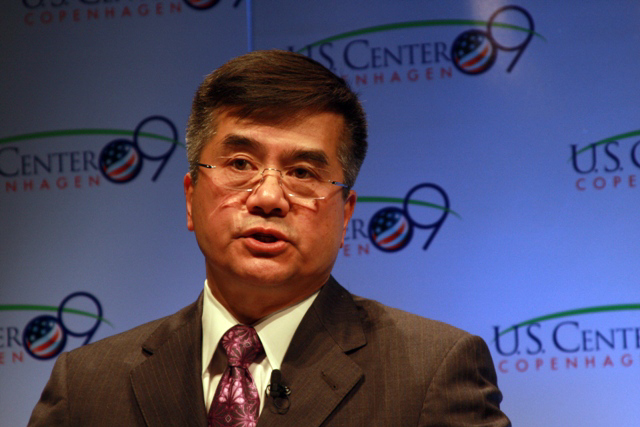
“Clean Energy Jobs in a Global Marketplace” Presentation at COP-15

U.S. Secretary of Commerce Gary Locke gives a keynote presentation at the U.S. Center: “Clean Energy Jobs in a Global Marketplace” during COP15 (Conference of the Parties to the UN Framework Convention on Climate Change) in Copenhagen, Denmark December 11, 2009.